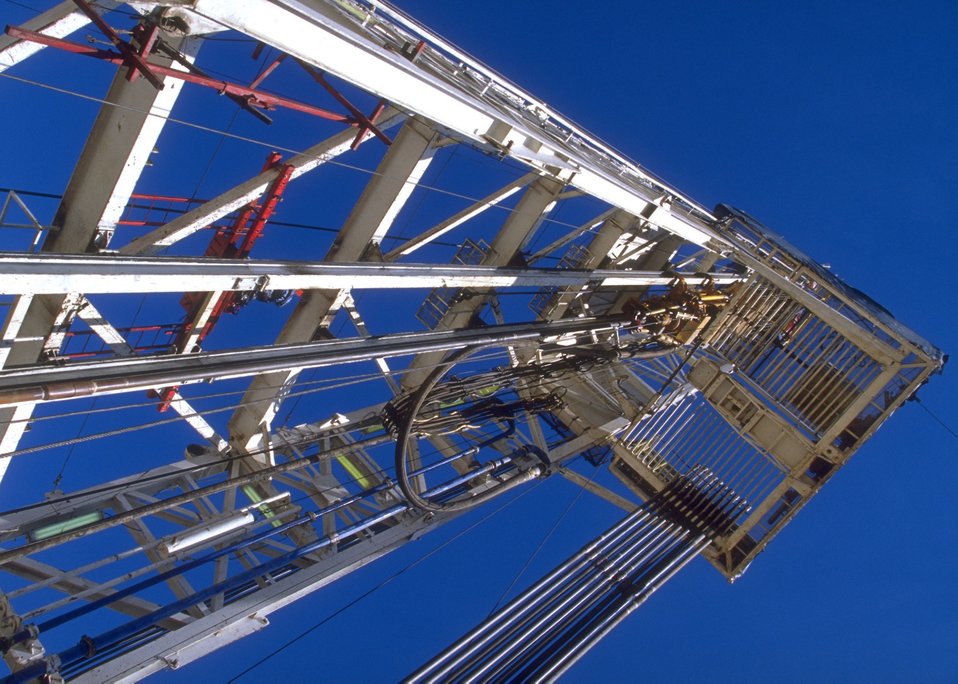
Burlington Northern deep well rig, Casper Field Office.